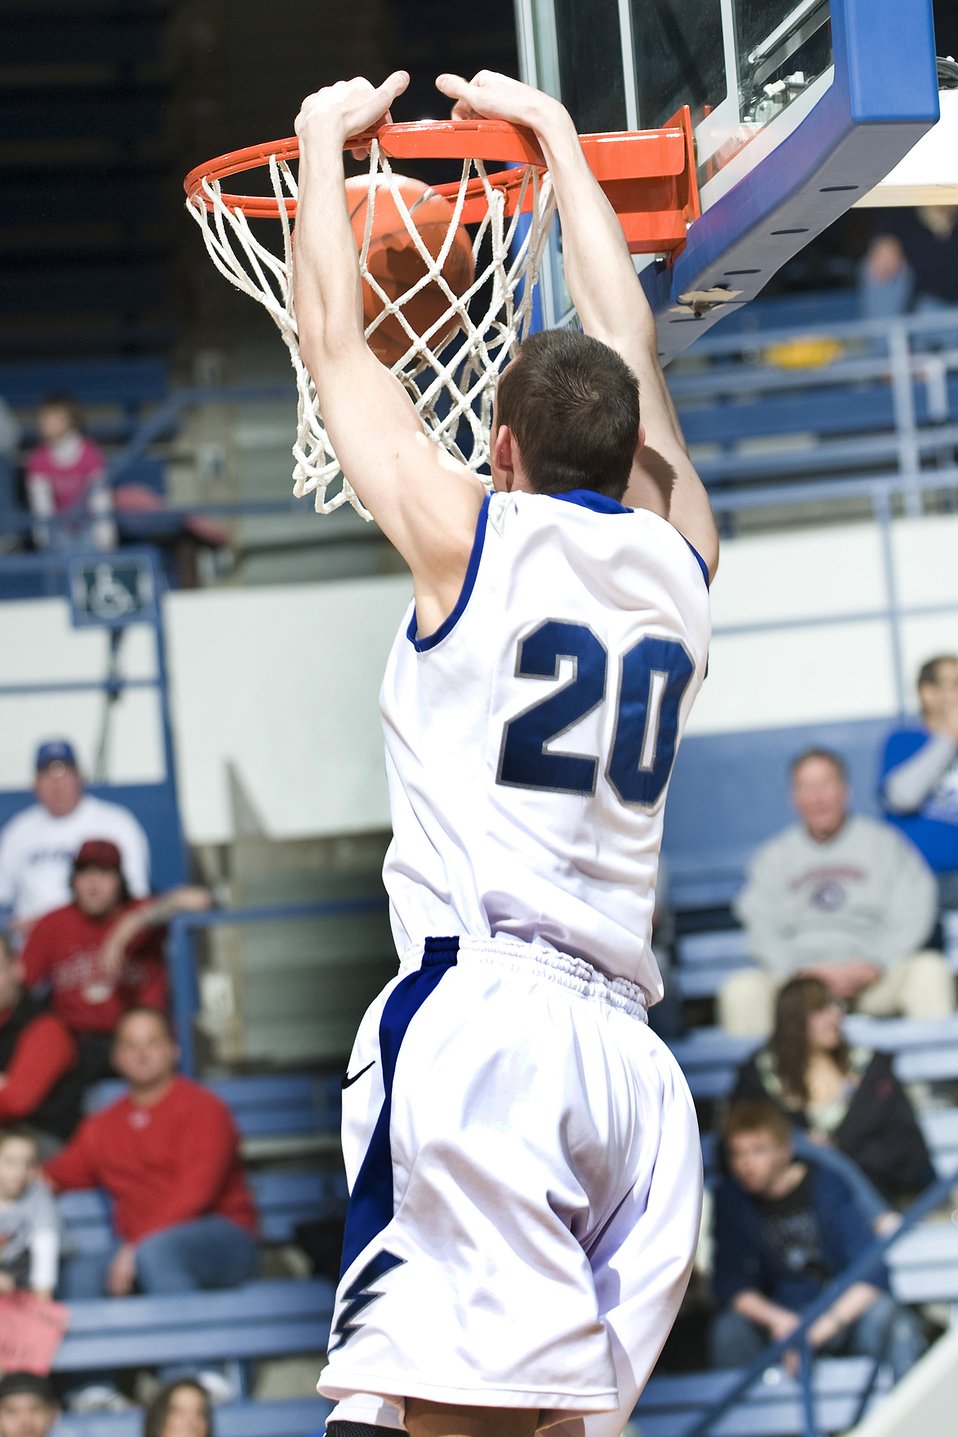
Falcons fall to Running Rebels

Falcon junior Forward Tom Fow makes his way to the basket during the game against the University of Nevada Las Vegas Running Rebels at the U.S. Air Force Academy's Clune Arena, Feb. 27, 2010. The Falcons were unable to get much penetration against a swarming man-to-man Rebel defense, and were forced to spend much of their time on the perimeter. UNLV went on to defeat the Falcons by a score of 77 to 47.